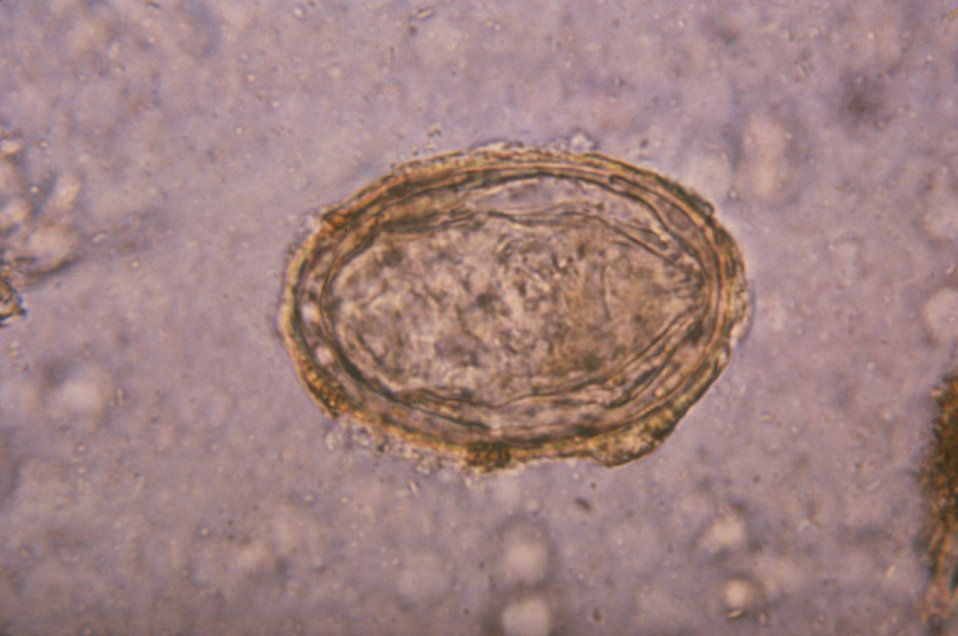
This micrograph reveals an egg from the trematode Schistosoma japonicum.